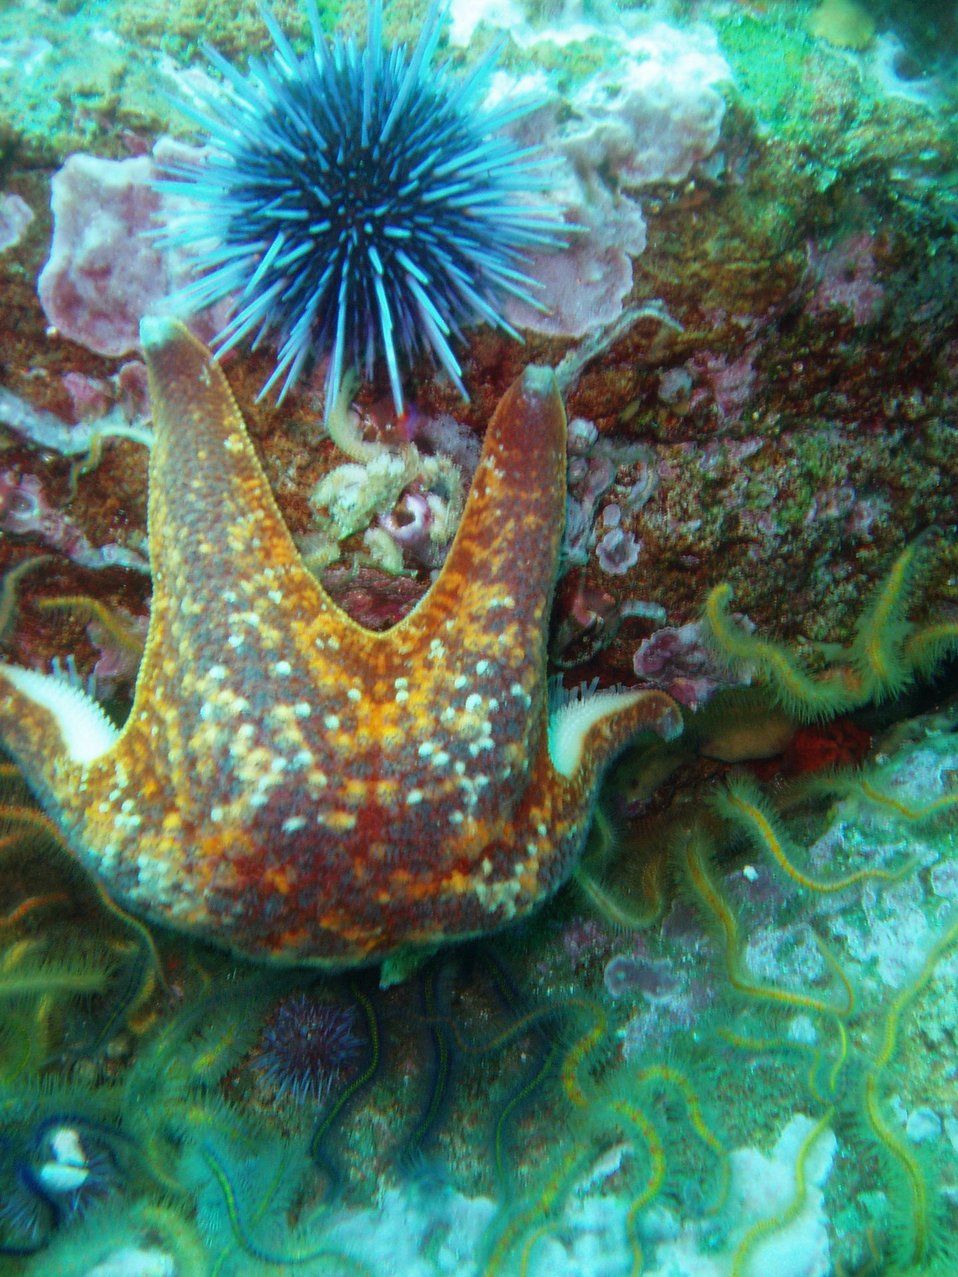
Bat star (Asterina miniata) and purple urchin (Strongylocentrotus purpuratus).